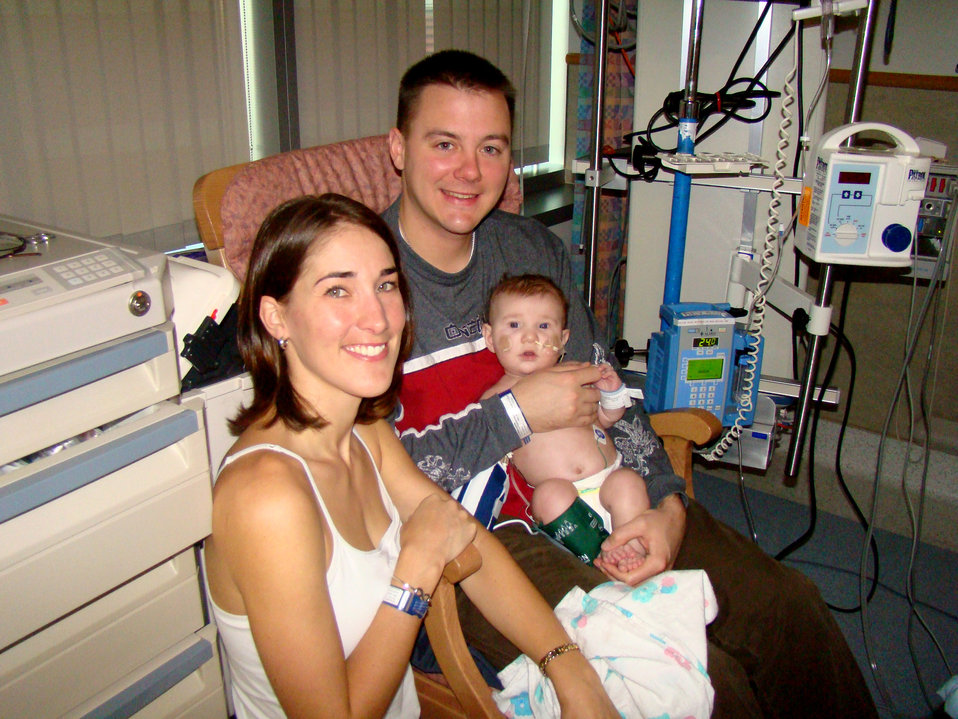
'Miracle baby' home for holidays

Miracle baby Austin Schlagheck overcame life-threatening medical problems to join mom and dad, Capt. Chris Schlagheck and Heidi, at home for Thanksgiving. Captain Schlagheck is assigned to Patrick Air Force Base, Fla.